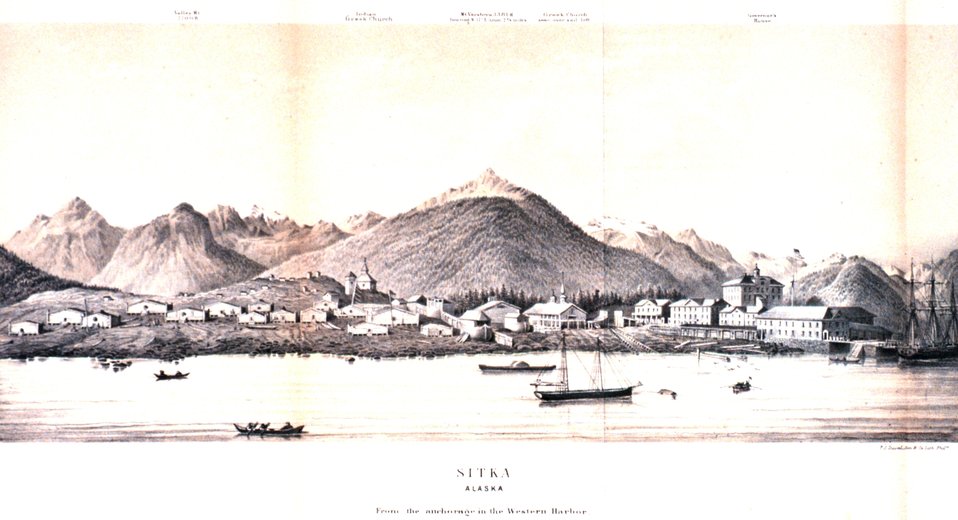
View of Sitka Harbor in: 'Coast Pilot of Alaska, (First Part,) ....' by George Davidson, 1869. P. 118. Library Call Number VK943 .N3 1st 1869.